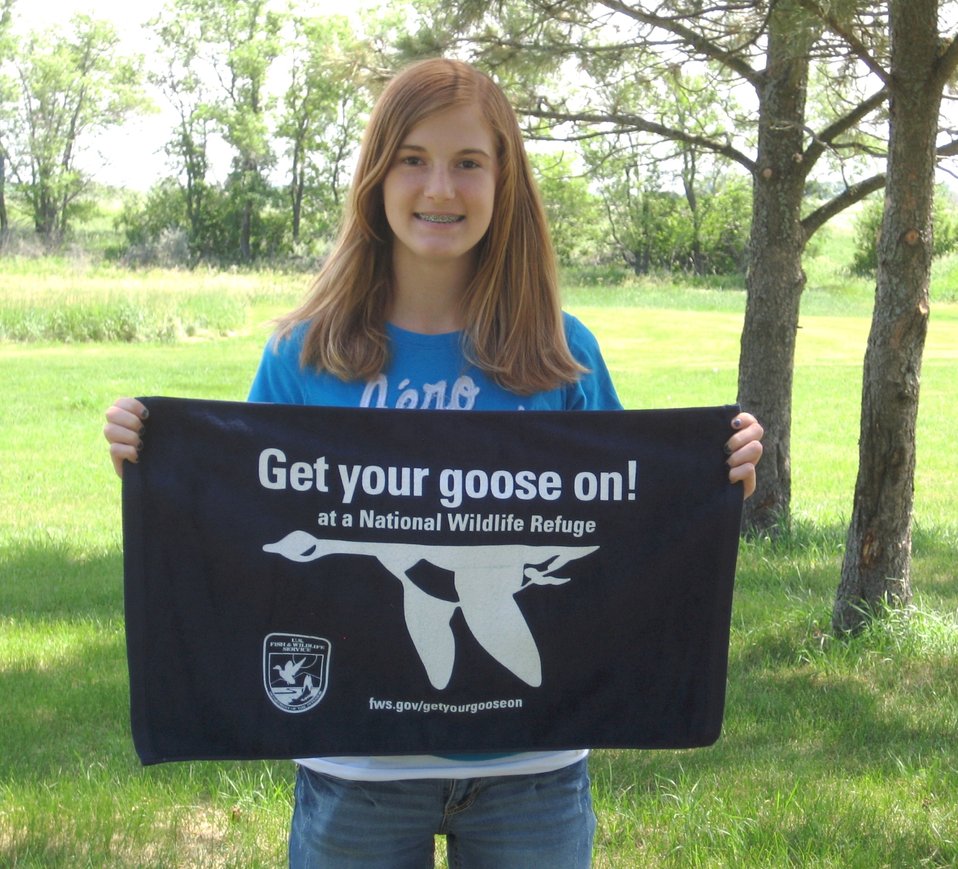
Get Your Goose On!

Taken at Tewaukon National Wildlife Refuge.